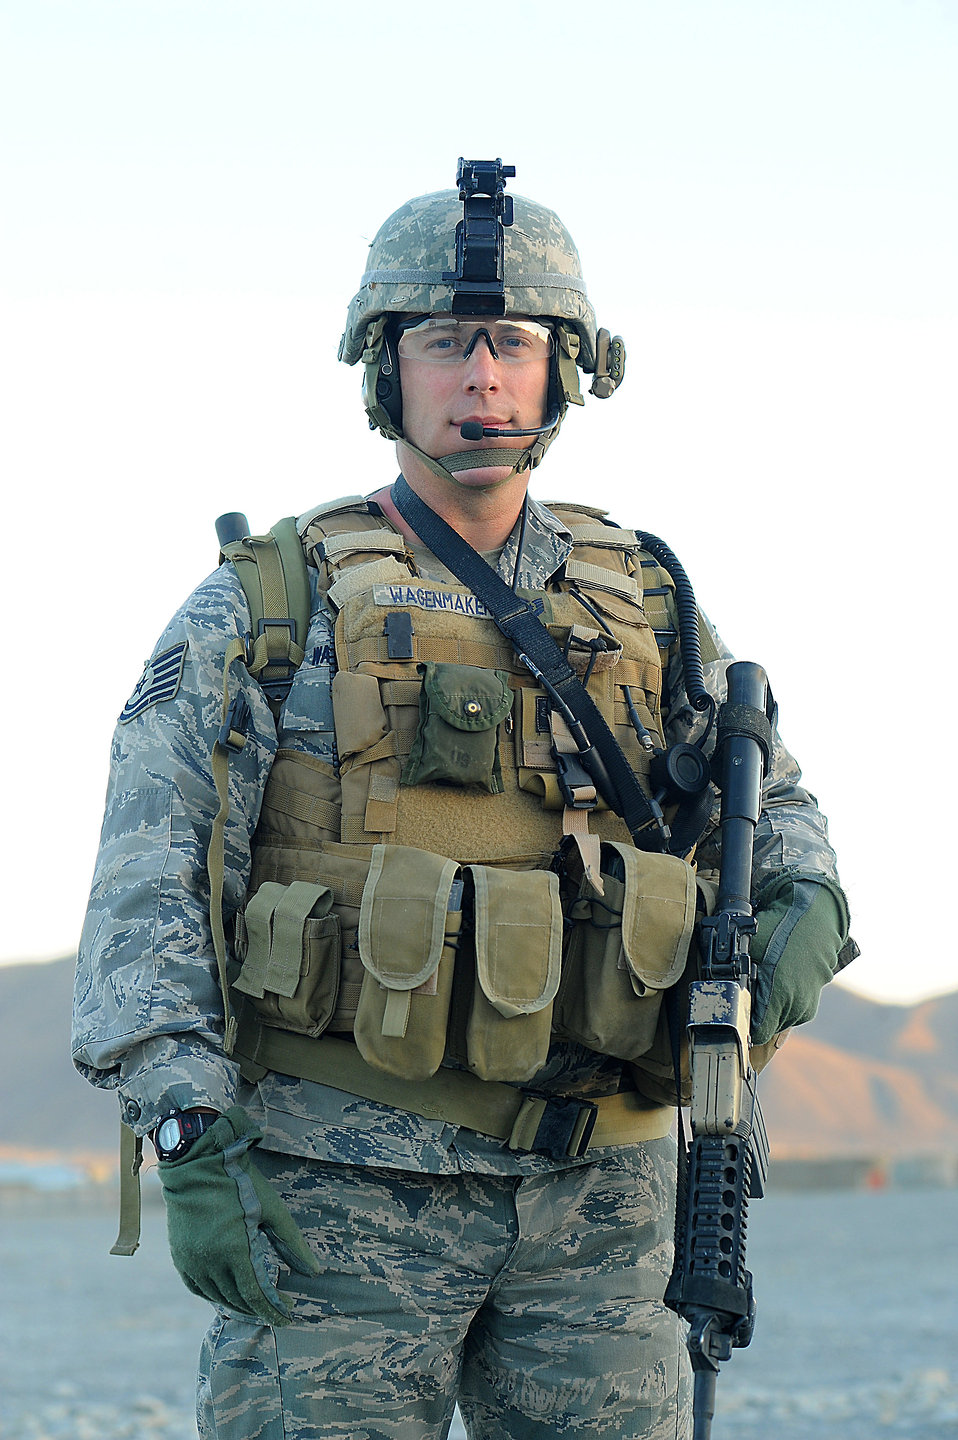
JTACs keep pilots on target to minimize collateral damage

As a joint terminal attack controller with the 2nd Battalion, 506th Infantry Regiment, Tech. Sgt. Harvey Wagenmaker is a liaison between Army ground commanders and pilots. He's responsible for planning, communicating and coordinating close-air support to eliminate enemy threats.